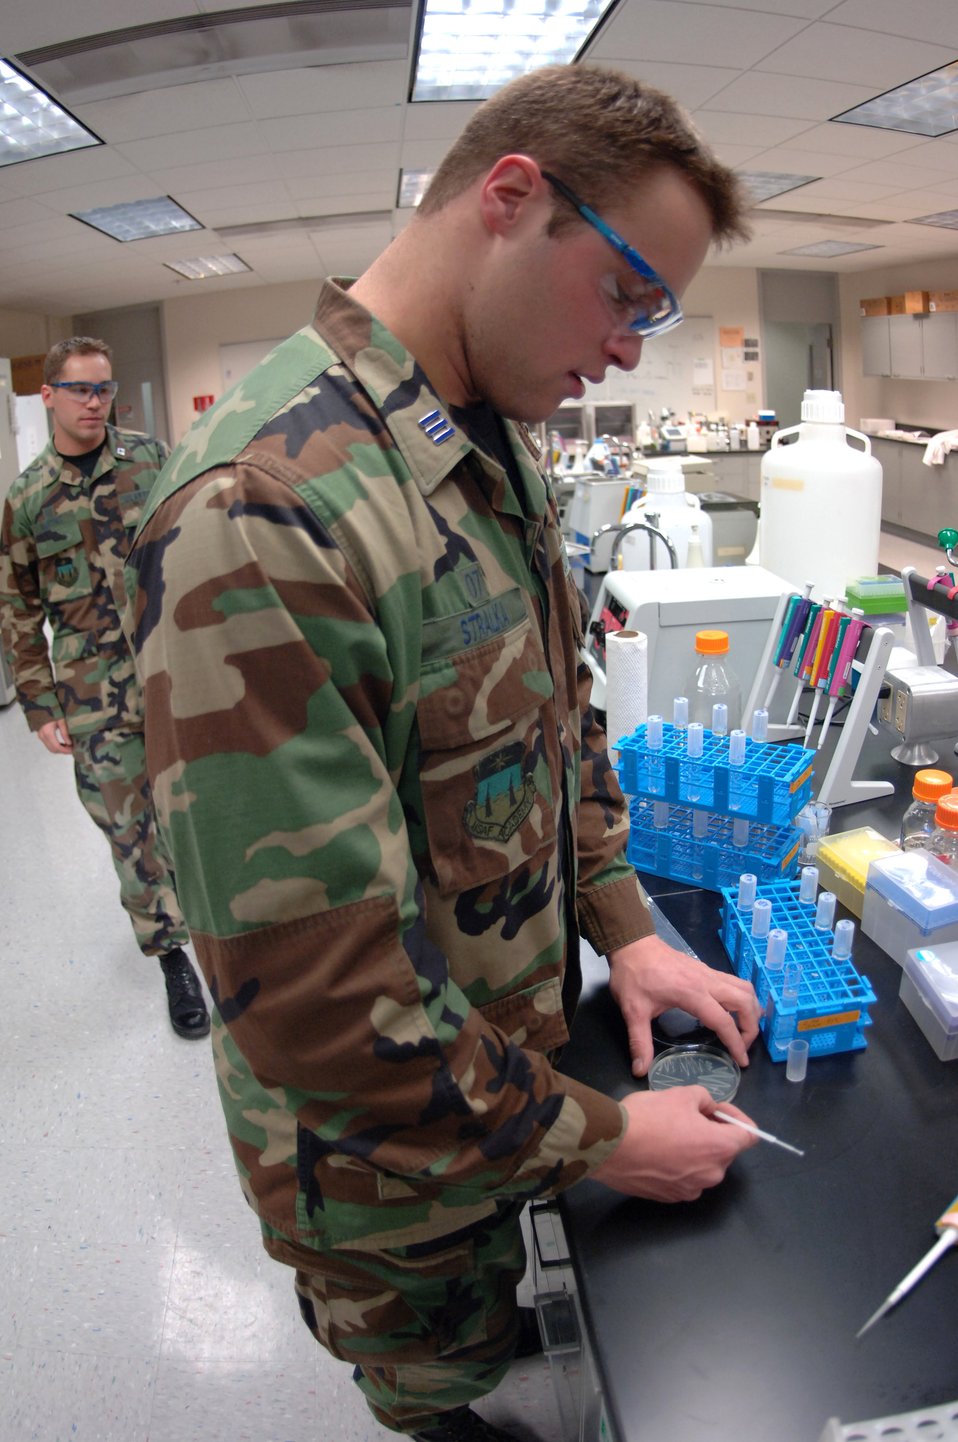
Cadets research fuel line bacteria

Cadet 1st Class Jonathan Stralka transfers a single bacteria colony from an agar plate in a laboratory at the U.S. Air Force Academy in Colorado Springs, Colo. The research done here by cadets has real world implications. Cadet Stalka is studying bacteria that digest jet fuel, resulting in a slimy substance that can foul an aircraft's engine.